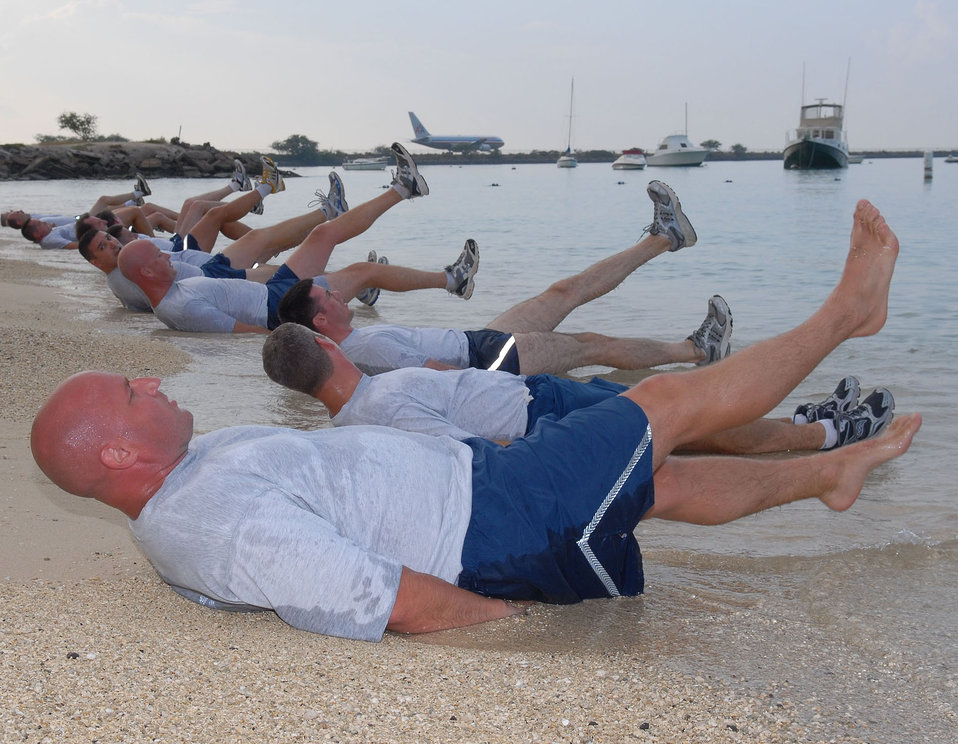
Beach workout

Members of the Pacific Air Forces A-staff perform scissor kicks May 27 at Hickam Beach near Hickam Air Force Base, Hawaii, during a morning